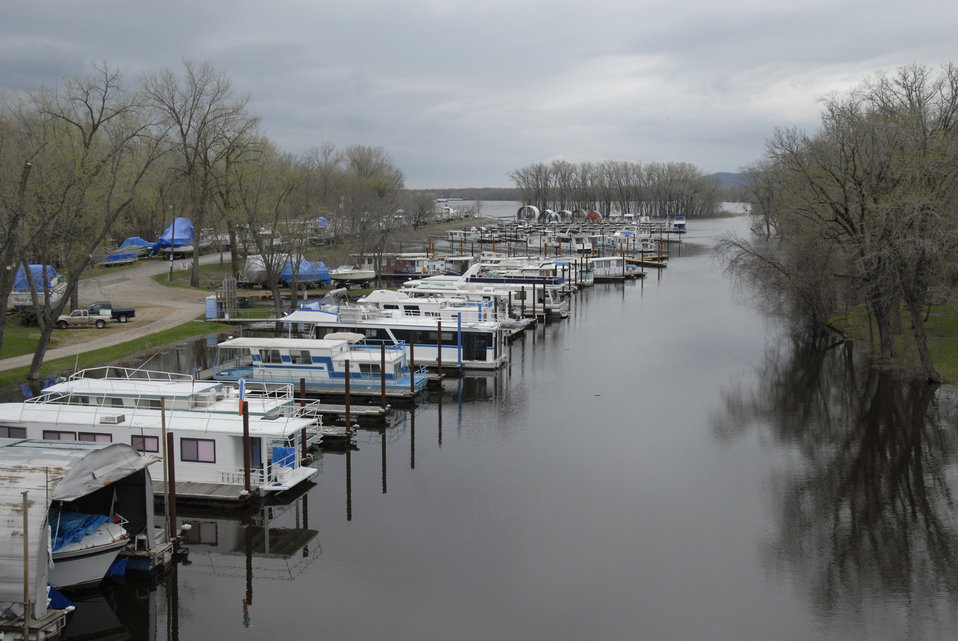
Houseboats tied up to piers along the Mississippi River in La Crosse, Wisconsin on April 25, 2008. The U.S. Department of Agriculture’s (USDA) Natural Resource Conservation Service (NRCS) has various programs to assist farmers and ranchers in implementing and maintaining conservation practices that will enable them to have more sustainable and profitable farms and ranches.